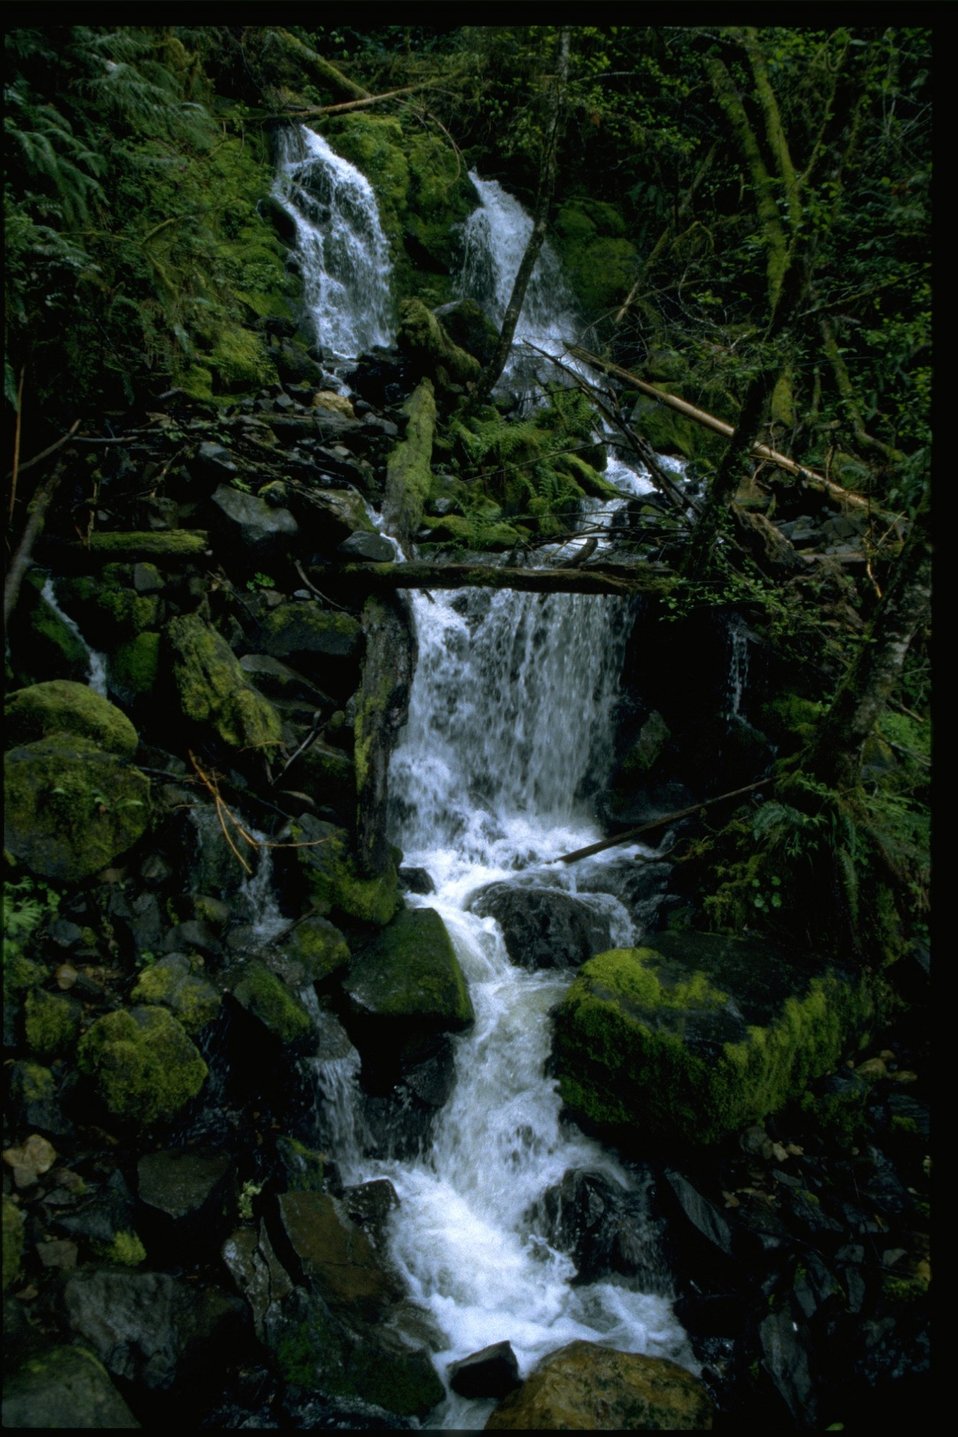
Swiftwater stream.